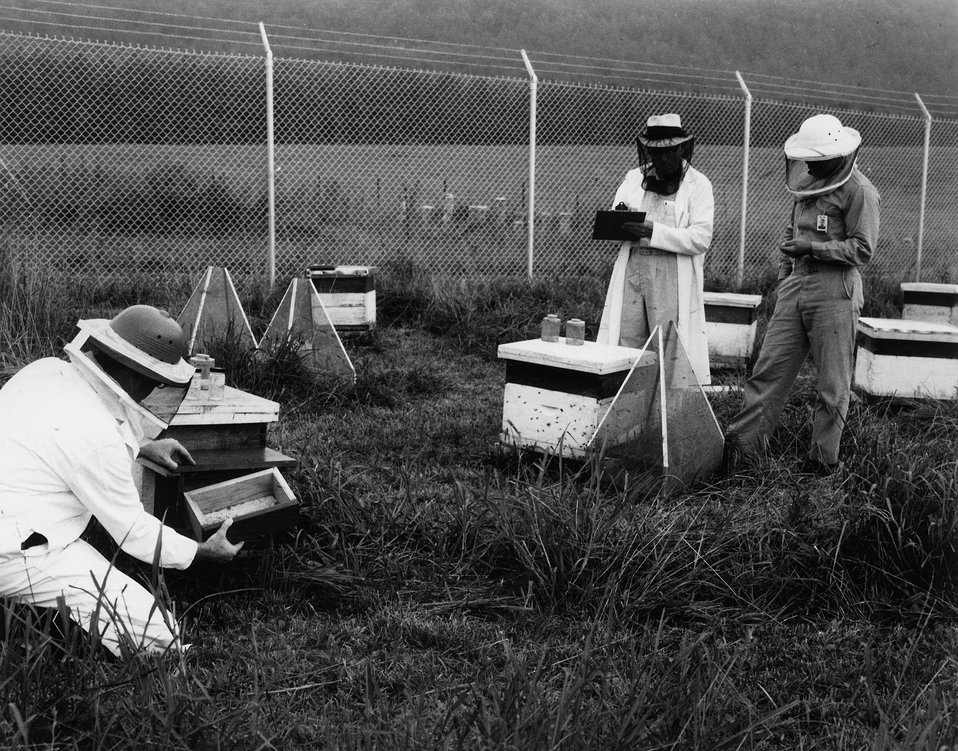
A change in flight activity and behavior occurs in honeybee colonies following irradiation with a cobalt-60 source. In this photo, at left, pollen balls are being examined in the drawer of a pollen trap. c. 1970